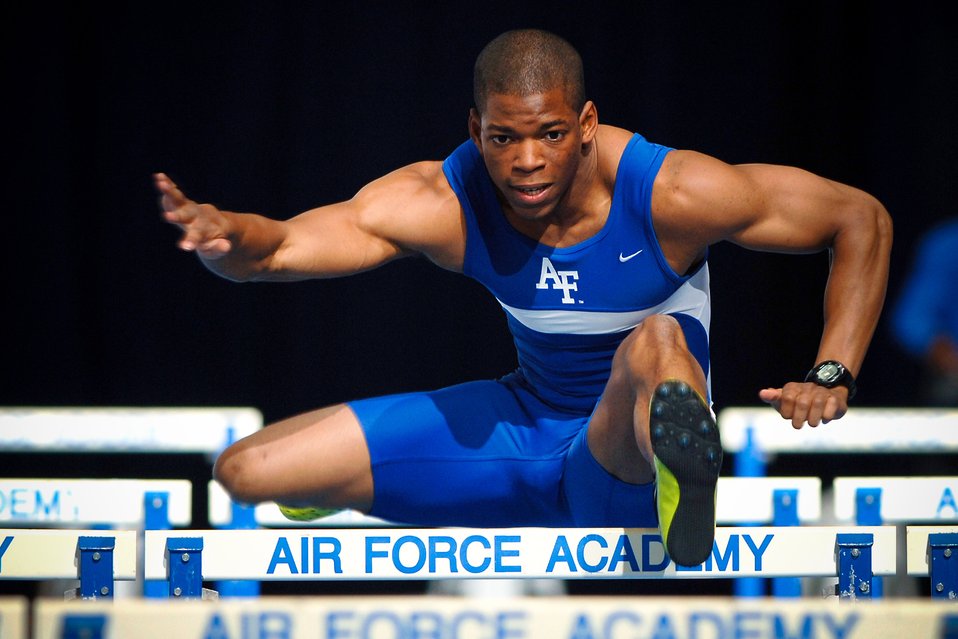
Focusing on the win

Air Force Academy junior Kellen Curry paced the field of the 60-meter men's hurdles with a winning time of 8.09 seconds at the Air Force All-Comers Meet Jan. 13 at Colorado Springs, Colo. The Air Force track and field team opened the season by hosting the annual competition.